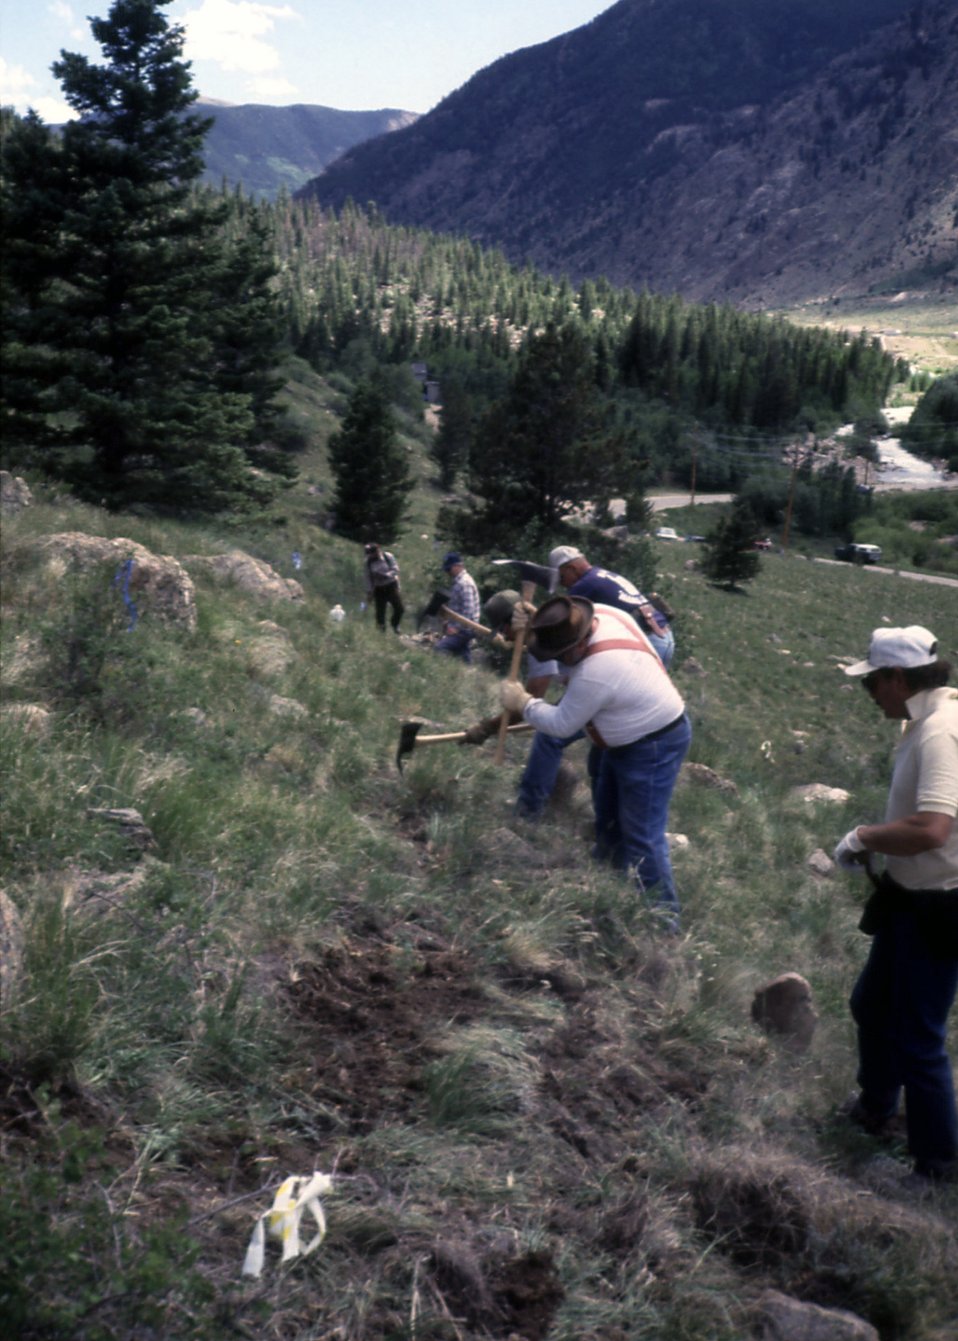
Main trail & volunteers